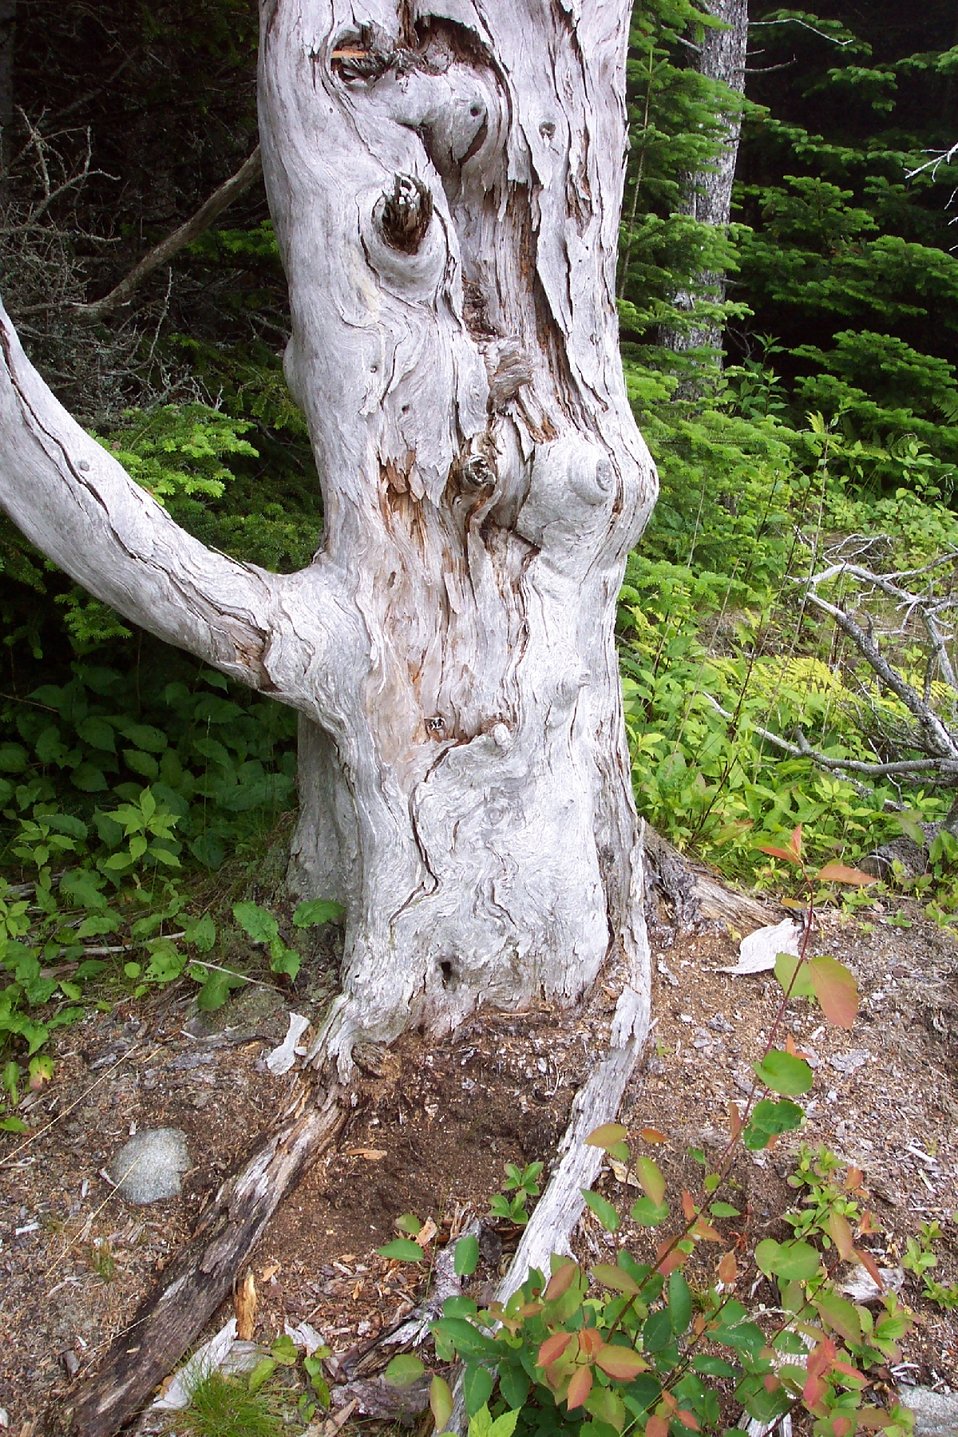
Patterns in a weather-beaten tree trunk.